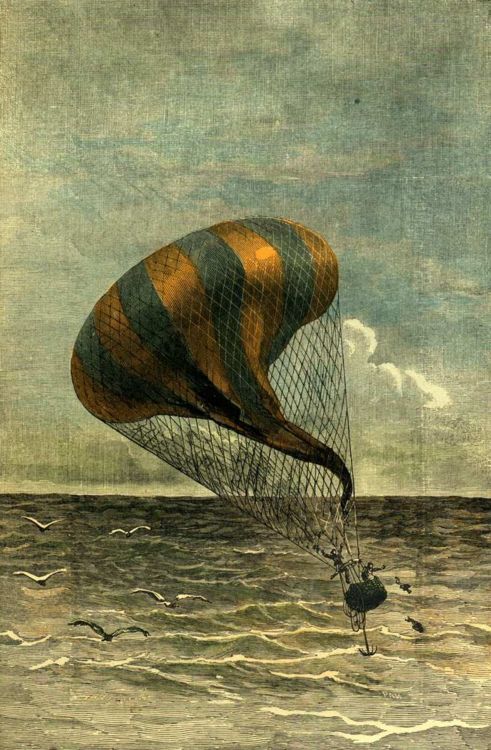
An illustration from Jules Verne's short story 'A Drama in the Air' (1851) drawn by √âmile-Antoine Bayard. Polski: Ilustracja opowiadania Juliusza Verne'a 'Dramat w balonie' (tytu≈Ç by≈Ç przek≈Çadany tak≈ºe jako 'Dramat w przestworzach', 1851) autorstwa √âmile-Antoine Bayarda. Fran√ßais†: Jules Verne: 'Un Drame dans les airs', par √âmile-Antoine Bayard. Orginal description taken from the book: Fran√ßais†: Le ballon se d√©gonflait de plus en plus.